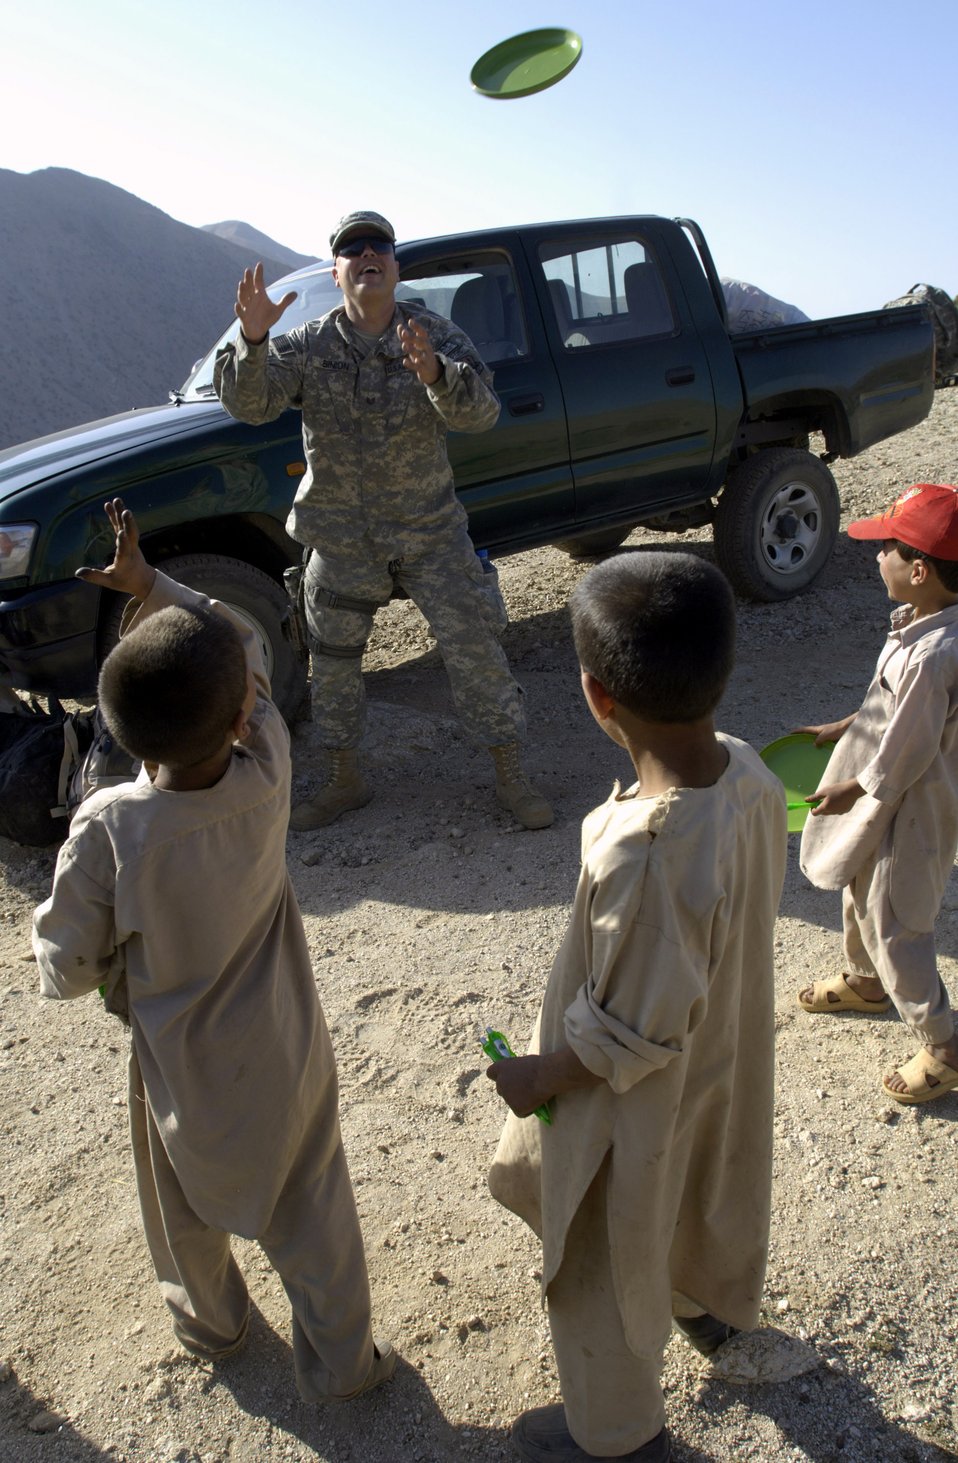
Panjshir PRT

Panjshir Provincial Reconstruction Team member Tech. Sgt. Ralph Binion III plays with village boys Aug. 7. Sergeant Binion is a services craftsman deployed from Mountain Home Air Force Base, Idaho. He and his fellow PRT members made an 11-mile round-trip trek over a mountain pass and into a river valley to provide medical care to Afghans living in Roydara village in the Shutol district of Panjshir province, Afghanistan.